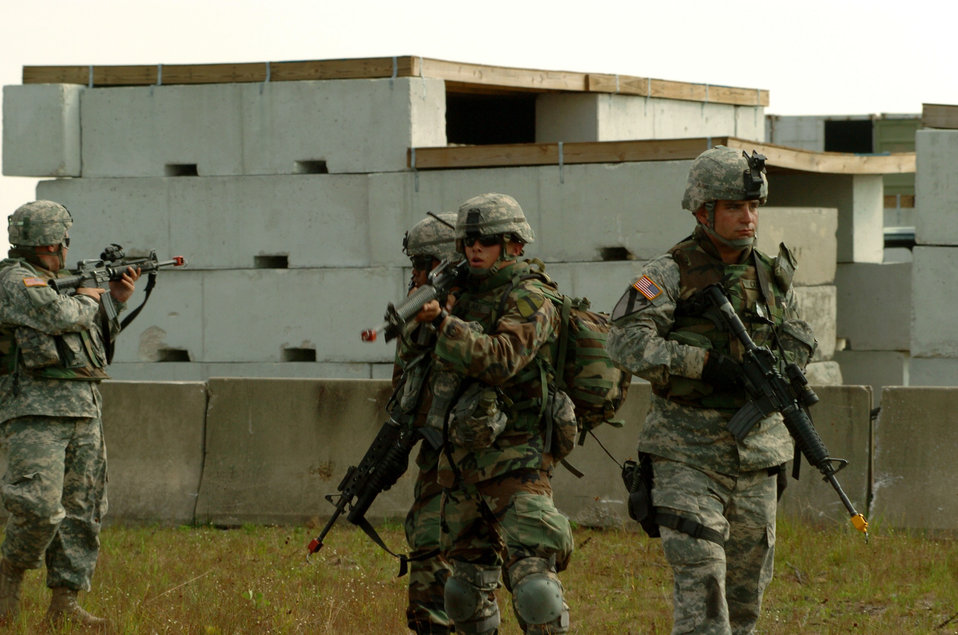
Atlantic Strike III

Members of a 42-person scout team from the 1st Cavalry Division at Fort Hood, Texas, clear the mock village at Avon Park, Fla., on Wednesday, March 29, 2006 as part of Atlantic Strike III, a joint air and ground training event.